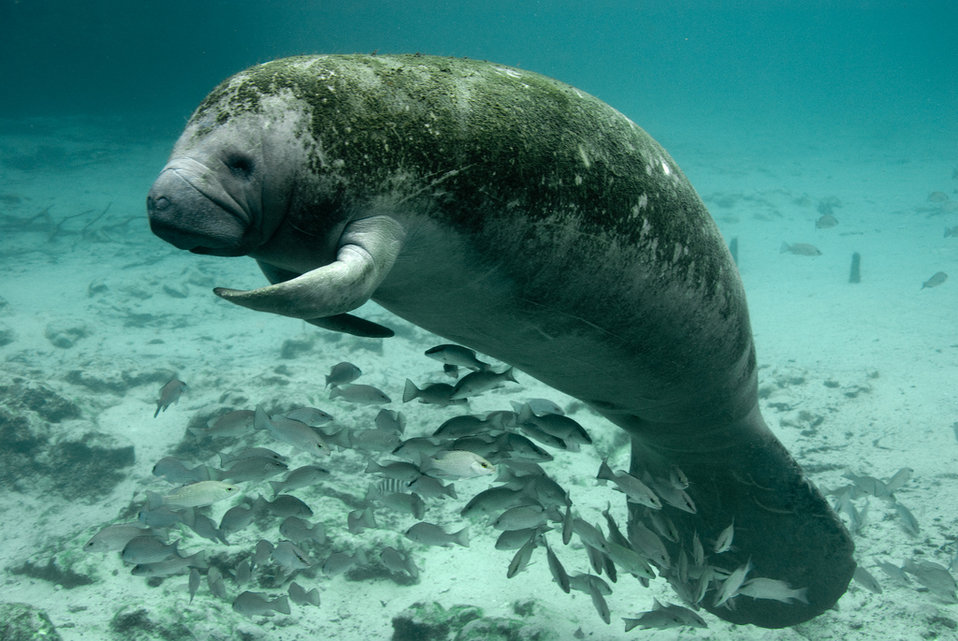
Endangered Florida manatee (Trichechus manatus)

Photo credit: Keith Ramos

Manatee resting at Three Sisters Springs (Crystal River NWR) while shading over a school of mangrove snappers.

The Crystal River National Wildlife Refuge, was established in 1983 specifically for the protection of the endangered West Indian Manatee. This unique refuge preserves the last unspoiled and undeveloped habitat in Kings Bay, which forms the headwaters of the Crystal River. The refuge preserves the warm water spring havens, which provide critical habitat for the manatee populations that migrate here each winter.
Wildlife Refuge, was established in 1983 specifically for the protection of the endangered West Indian Manatee. This unique refuge preserves the last unspoiled and undeveloped habitat in Kings Bay, which forms the headwaters of the Crystal River. The refuge preserves the warm water spring havens, which provide critical habitat for the manatee populations that migrate here each winter.